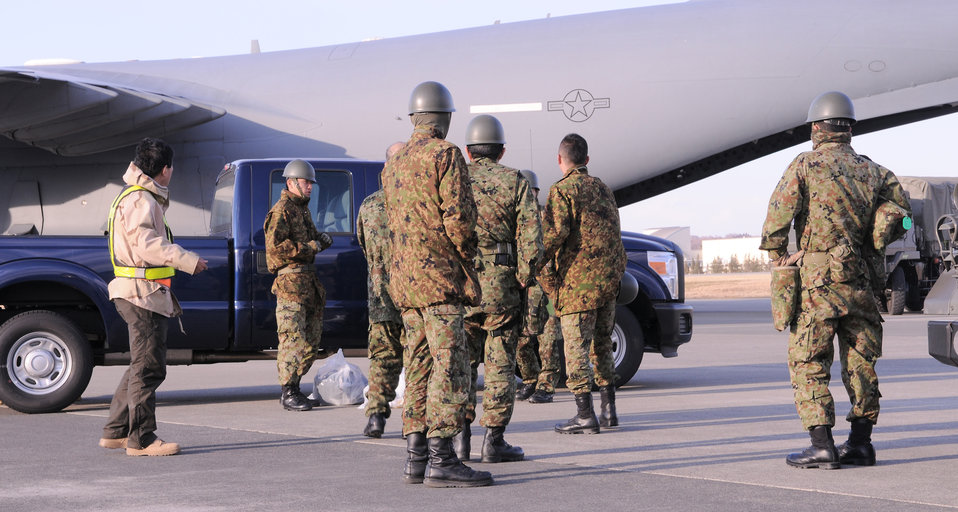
C-17 transports Japanese forces to help relief efforts

Japan Ground Self-Defense Force members arrive at Yokota Air Base, Japan from Okinawa, March 17, 2011. JGSDF service members will team with U.S. forces to provide support for earthquake and tsunami relief efforts.